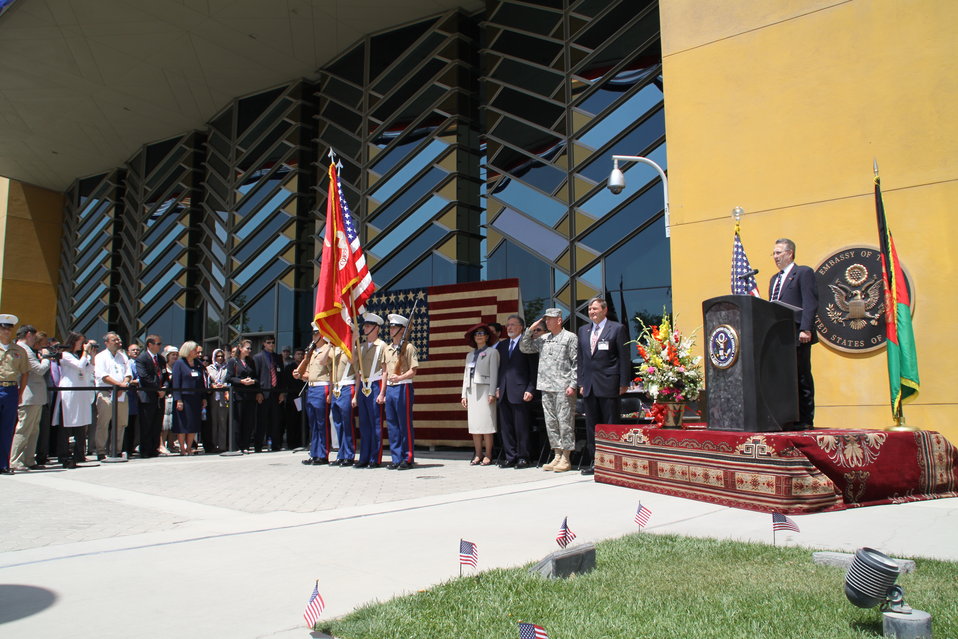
Kabul Official July 4th Celebration